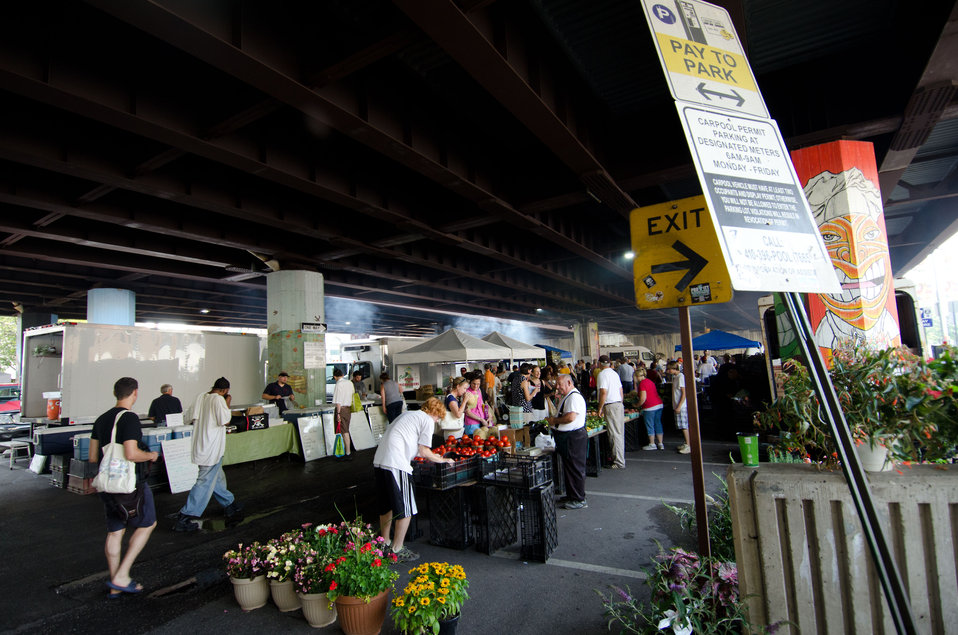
In a parking lot under a highway interchange, Baltimore’s Farmers Market and Bazaar has a busy day despite a heat index over 100 degrees in Baltimore, MD on Sunday, July 8, 2012. . Many of the vendors now accept Baltimore’s Farmers Market and Bazaar tokens thanks to the new wireless connected electronic card reader that accepts the U.S. Department of Agriculture’s (USDA) Food Nutrition Service’s (FNS) Supplemental Nutrition Assistance Program (SNAP) Electronic Benefits Transfer (EBT) cards, Baltimore Bucks, and debit cards.